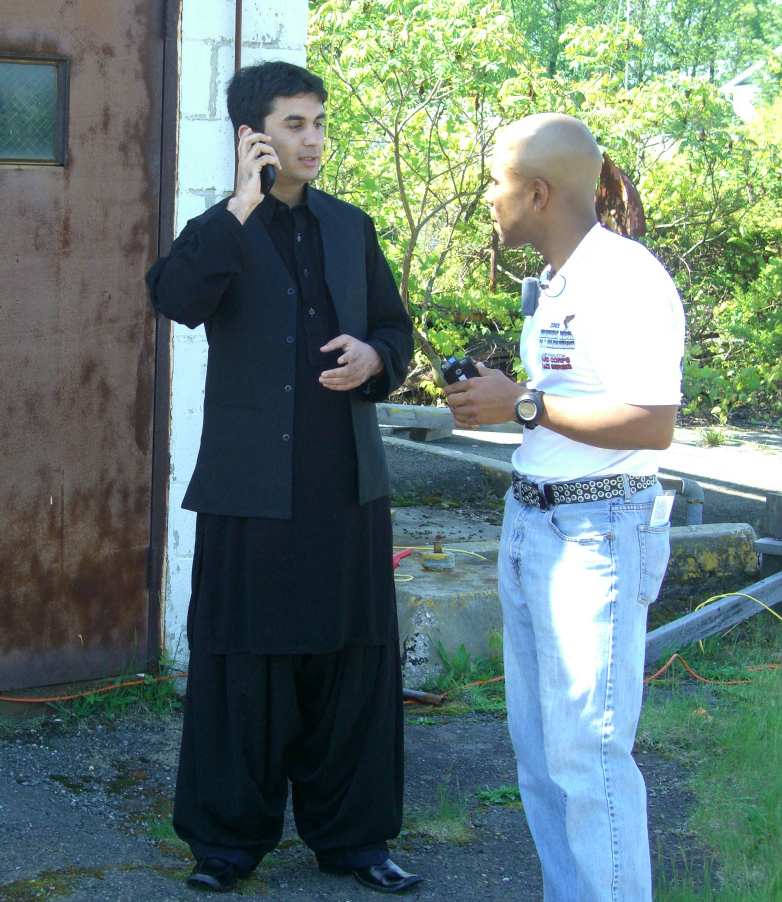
Smart Phone; Translation; Language

A U.S. Marine and a native Pashto speaker converse using a smart phone voice translation system as part of an evaluation of the technology recently conducted by NIST for the Defense Department.